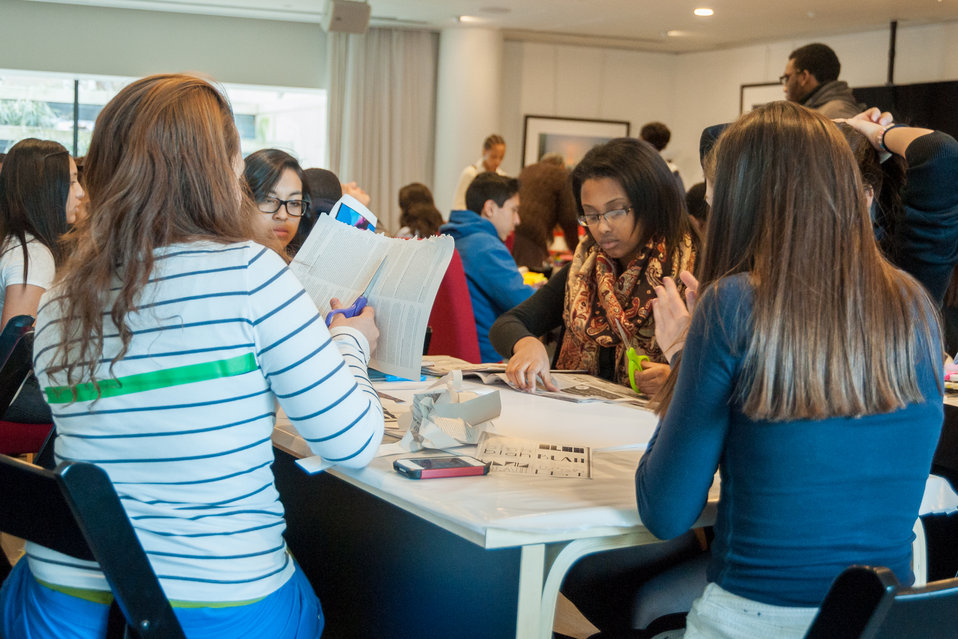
Mentor NDFW Event 2014

Mentor Foundation USA, in partnership with the National Institute on Drug Abuse (NIDA) and other key partners hosted a Youth Drug Facts Rally at the House of Sweden on Thursday, 30th January 2014. Approximately 200 students from five local high schools attended and had the opportunity to interact with top U.S. scientific experts and inspiring guest speakers to “shatter the myths” about drugs and substance abuse, while pledging to stay drug-free.